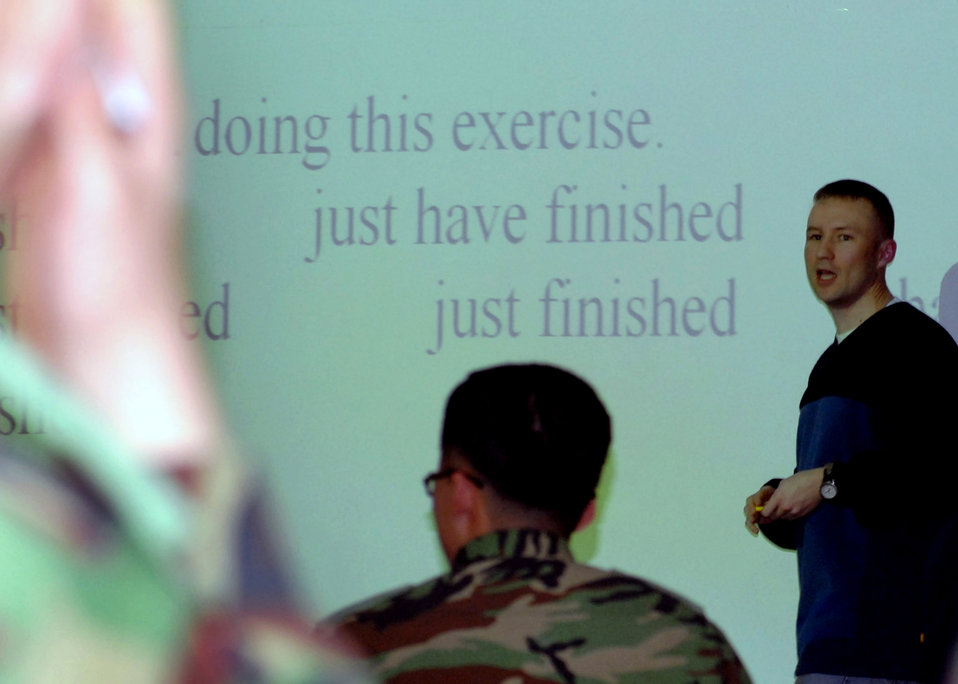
Kunsan Airmen teach English to South Korean cadets

Tech. Sgt. Richard Wagner teaches conversional English to students at the South Korean army NCO Academy Jan. 31 in South Korea. Numerous Airmen from the 5/6 group volunteer to teach assist South Korean army cadets English. Sergeant Wagner is the 8th Maintenance Squadron measurement diagnostic equipment laboratory chief.